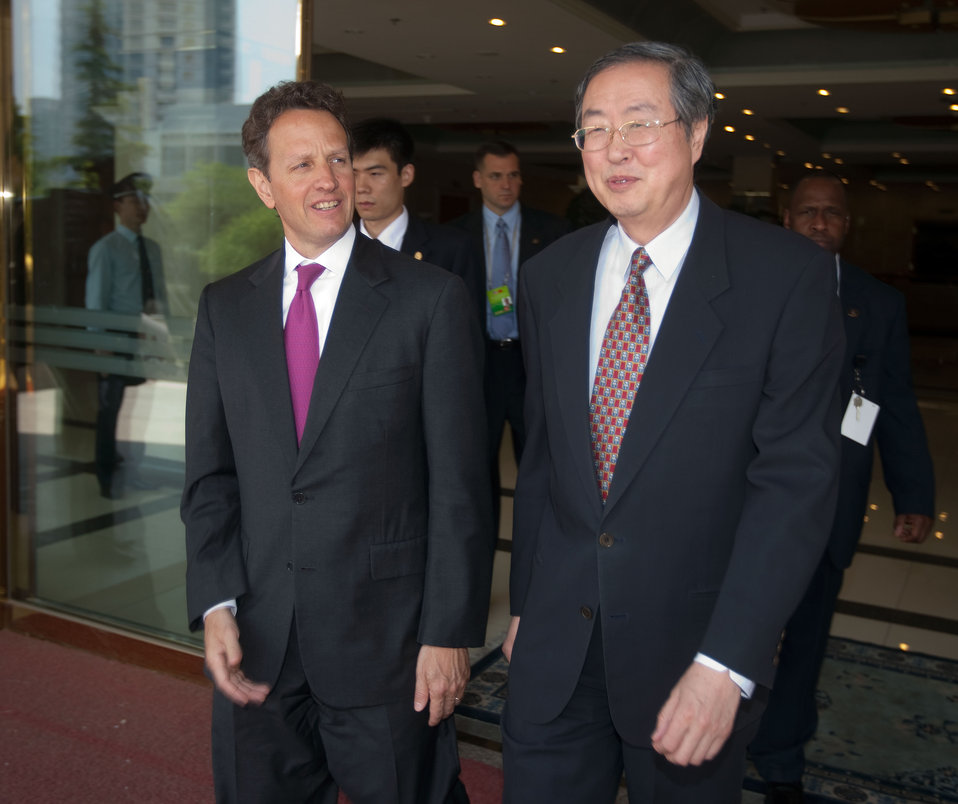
SandED, 5/23/10

Secretary Geithner and People's Bank of China Governor Zhou Xiaochuan, following a working lunch on May 23, 2010 in Beijing.